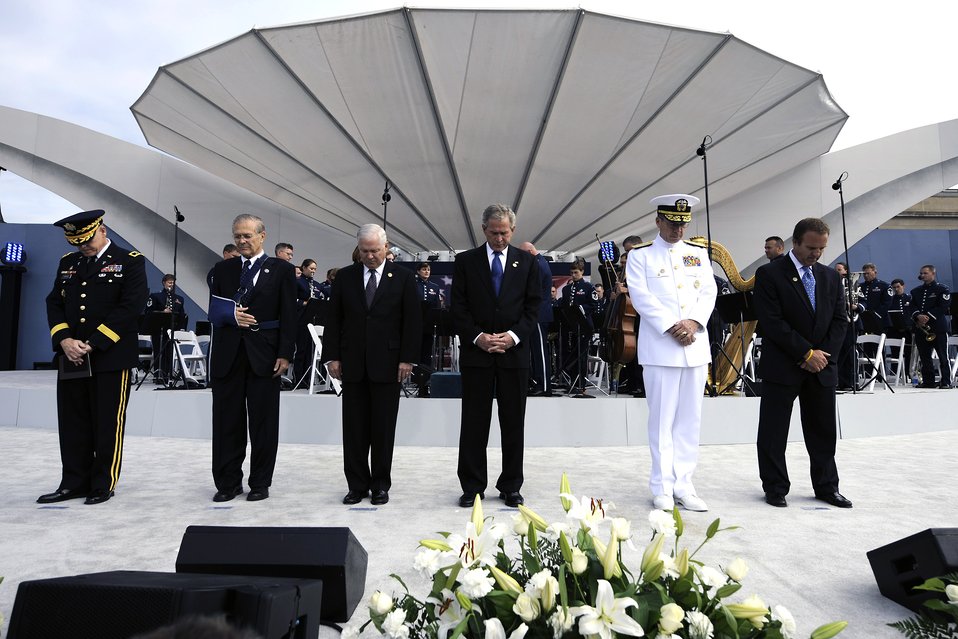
Pentagon Memorial opens to public

The official party holds a moment of silence during the Pentagon Memorial dedication ceremony Sept. 11 in Alexandria, Va. The national memorial is the first to be dedicated to those killed at the Pentagon on Sept. 11, 2001. The site contains 184 inscribed memorial units honoring the 59 people aboard American Airlines Flight 77 and the 125 in the building who lost their lives that day.